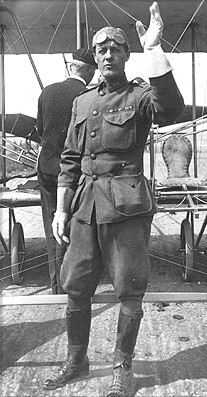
Maj. Gen. Benjamin D. Foulois

In 1910 Benjamin D. Foulois was sent to Texas with a Wright Pusher to establish the embryo of what developed into the U. S. Army Air Corps. He had to teach himself to fly with the assistance from the Wright Brothers in a series of letters. In a career that spanned six decades, Foulois designed the first airplane radio receiver, scouted Pancho Villa's rebels from an open-cockpit Curtis JN3 and demonstrated that the airplane was no longer an experiment or novelty, but a practical tool with many use military applications.